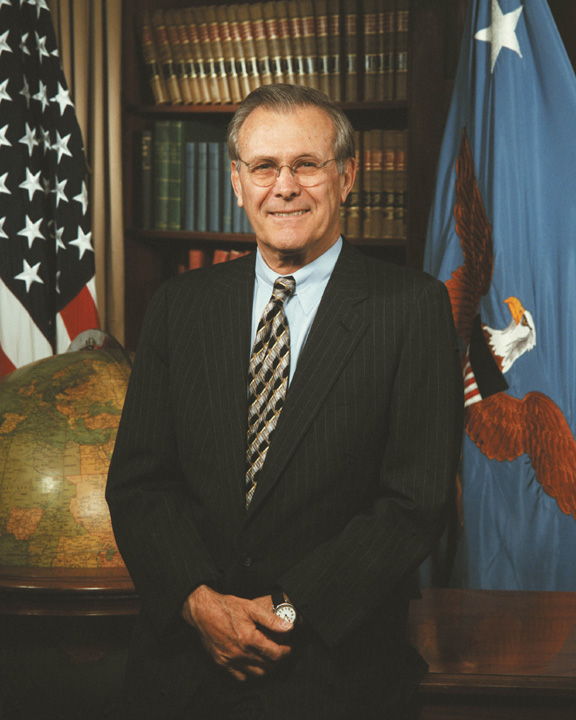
Secretary of Defense

Donald H. Rumsfeld